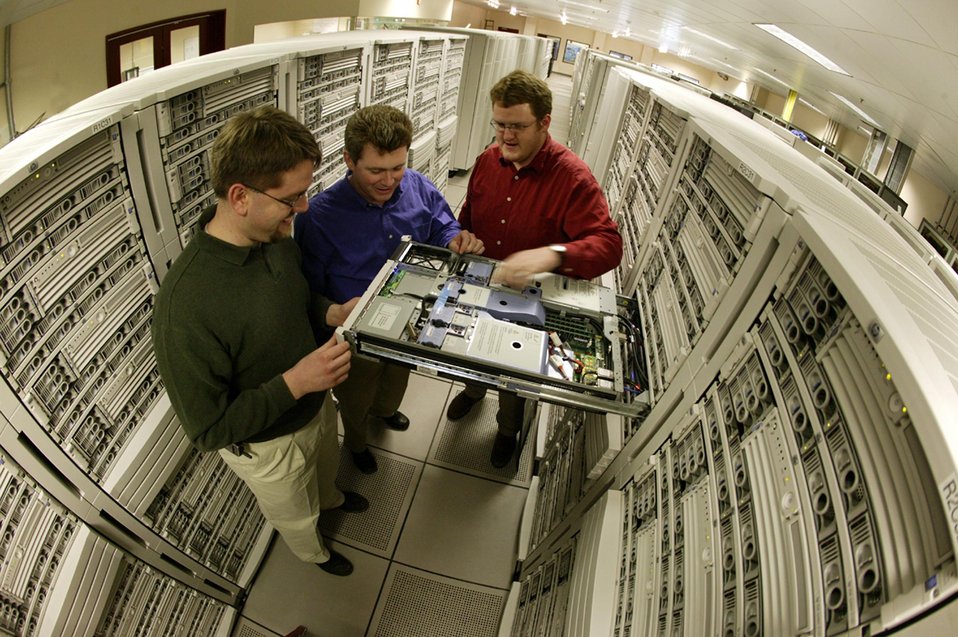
THIS TERAFLOPS COMPUTER AT DOE'S PACIFIC NORTHWEST NATIONAL LABORATORY IS THE FASTEST UNCLASSIFIED SUPERCOMPUTER IN THE UNITED STATES.

LOCATED AT PNNL'S WILLIAM R. WILEY ENVIRONMENTAL MOLECULAR SCIENCES LAB, THIS 11.8 TERAFLOPS INDUSTRY STANDARD HP INTEGRITY SYSTEM IS THE FIFTH FASTEST SYSTEM IN THE WORLD AND THE FASTEST UNCLASSIFIED COMPUTER IN THE U.S. THE ADDITIONAL POWER AND SPEED WILL ENABLE NOVEL STUDIES IN ATMOSPHERIC CHEMISTRY, CLIMATE AND SUBSURFACE CHEMISTRY, SYSTEMS BIOLOGY, CATALYSIS AND MATERIALS SCIENCE.